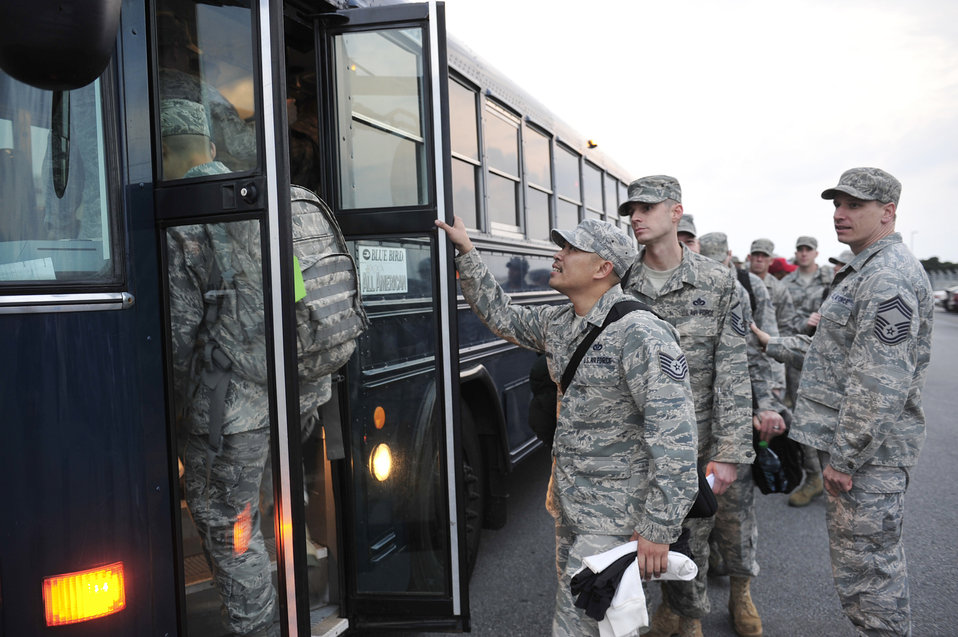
18 CEG pushes north to aid Misawa AB

Chief Master Sgt. Robert Rucinski, superintendent of the operations flight. 18th Civil Engineer Squadron provides a send-off to members of the 18th Civil Engineer Group as they embark on a mission north to Misawa Air Base, here at Kadena Air Base, March 12. 18th CEG will provide twenty hour manning assistance to Misawa personnel in the aftermath of a natural disaster that took out their power supply.